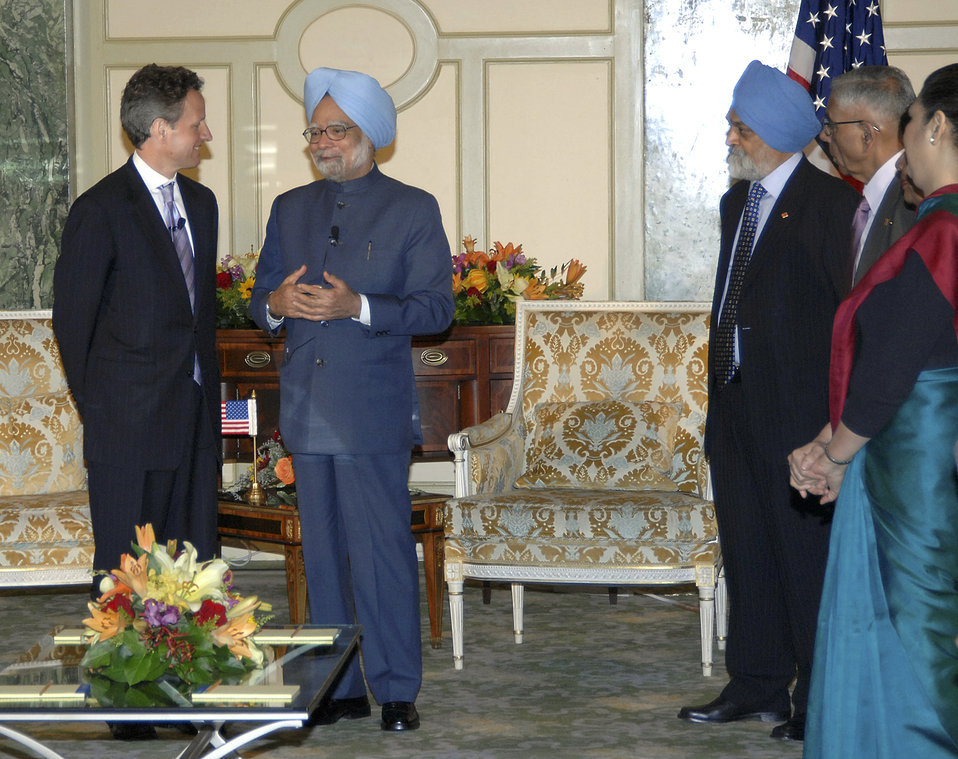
Prime Minister Singh of India

On November 25, 2009, Secretary Geithner participated in a bilateral meeting with Prime Minister Singh of India.